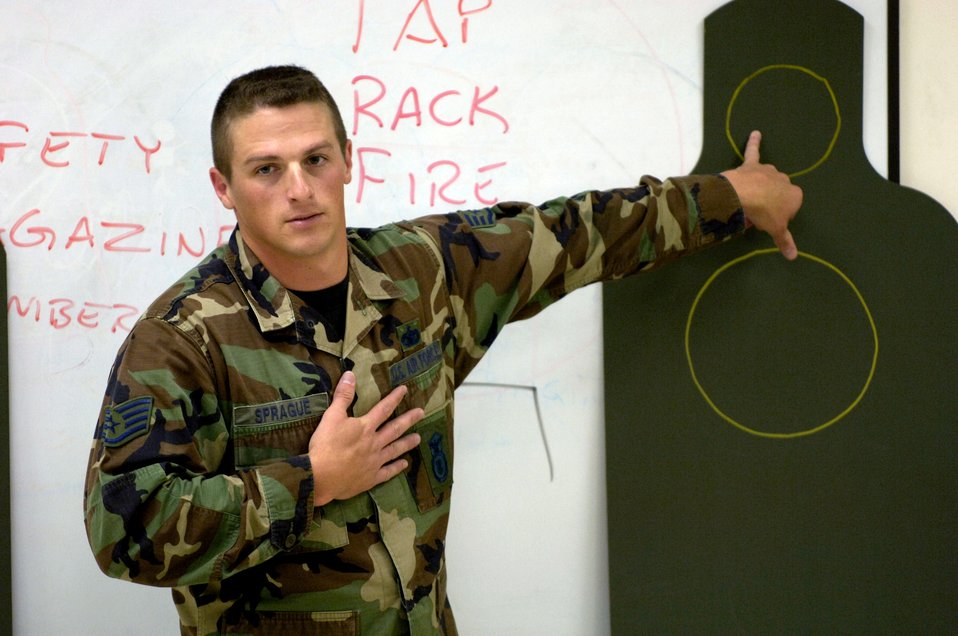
Staying proficient

Staff Sgt. Erik Sprague discusses aim points on a target during his small-arms training class at the shooting range at Schoefield Barracks, Hawaii, on July 7. Sergeant Sprague is a combat arms training instructor from nearby Hickam Air Force Base.